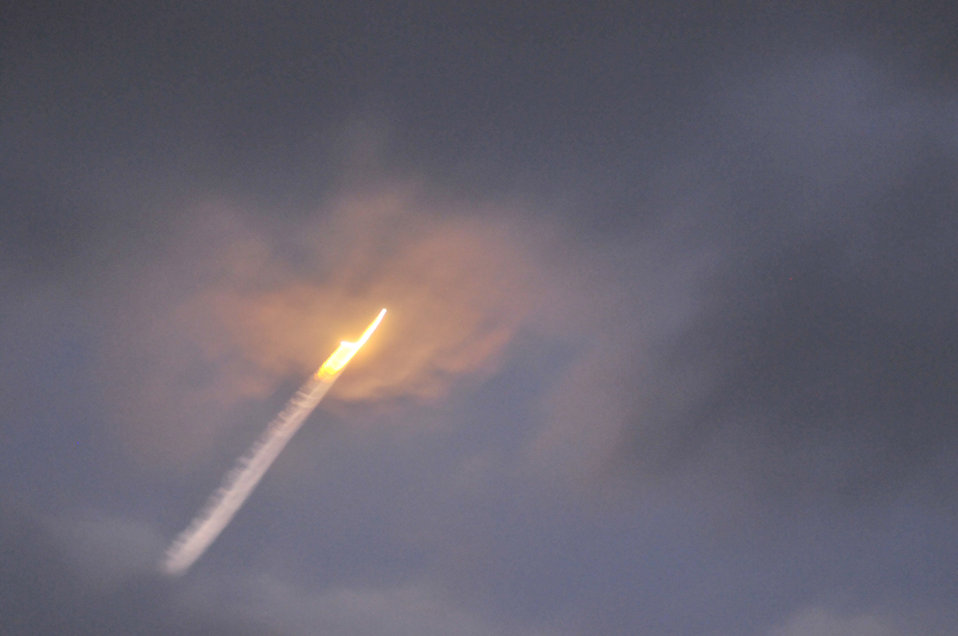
Reservists support rocket launch

Air Force Reserve helicopter, maintenance and life support personnel from the 920th Rescue Wing, with mission partners from their host wing, the 45th Space Wing, supported the successful launch of a Delta IV-Heavy Launch Vehicle Nov. 21, 2010, from Cape Canaveral Air Force Station, Fla. Both wings are from nearby Patrick Air Force Base.